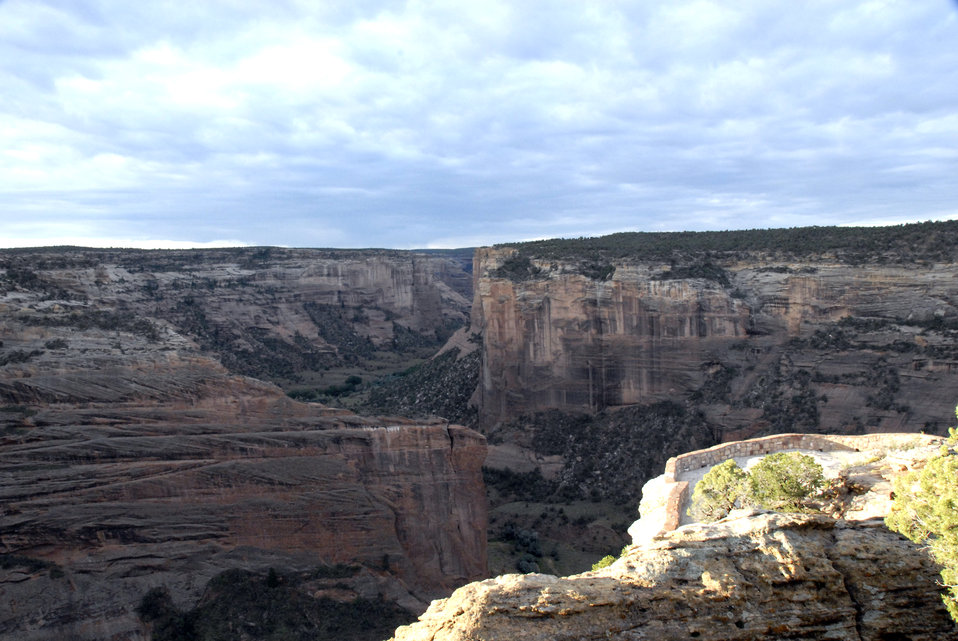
The sun slowly rises over Canyon de Chelly National Monument in Chinle, Arizona on September 11, 2008.